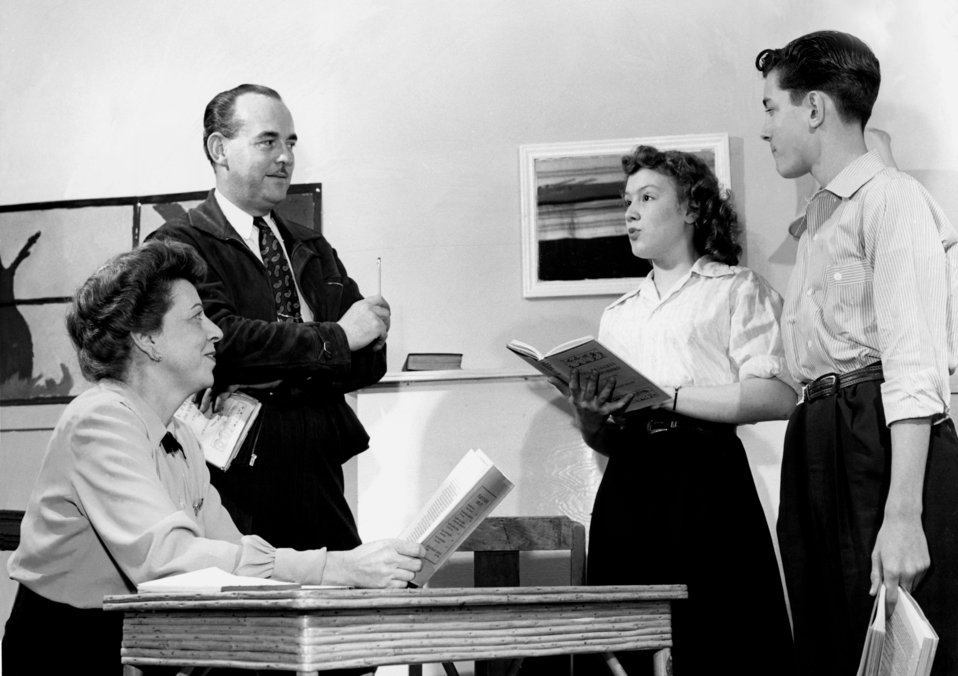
Children's Theater Oak Ridge 1948

4425-2 DOE photo Ed Westcott 3-13-1948 Oak Ridge Tennessee